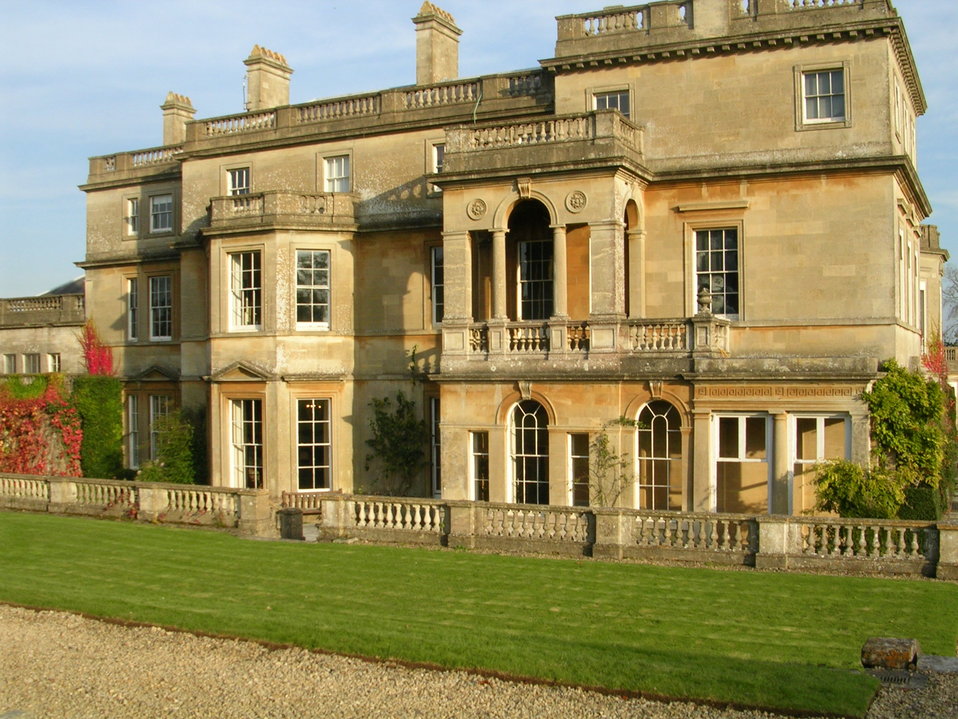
House in Wiltshire photographed by User:Giano who releases all rights into the public domain. 18th century mansion built of Bath stone, with Italianate alterations.